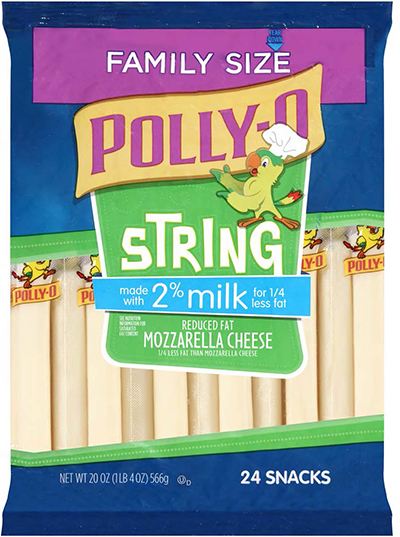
RECALLED – Cheese

October 25, 2013 – Product Recall – Kraft Voluntarily Recalls Some Varieties of Kraft And Polly-O String Cheese And String Cheese Twists Due to Premature Spoilage.